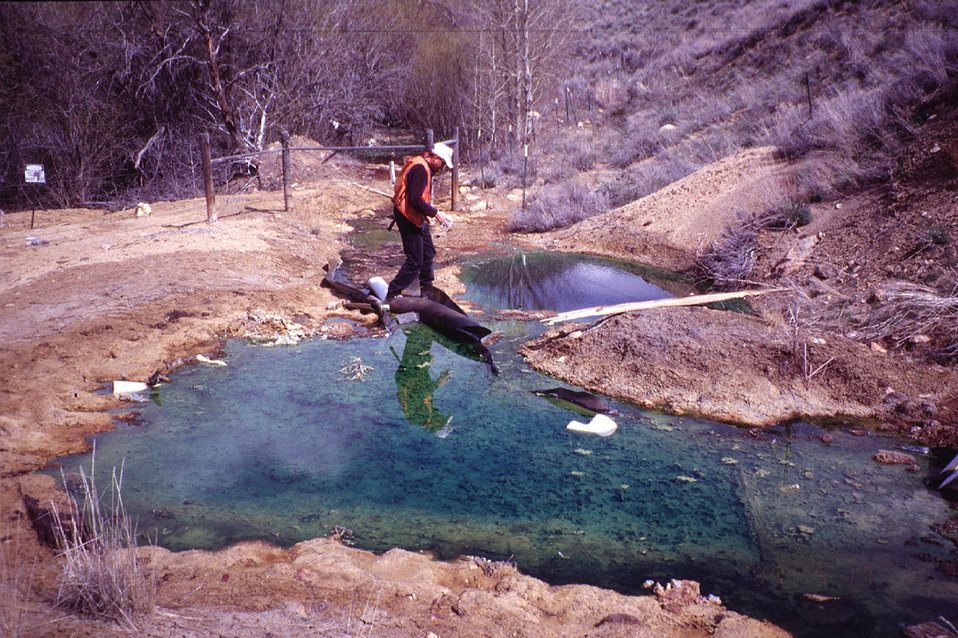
Champagne Creek Acid Mine drainage Southeastern Idaho Idaho Falls Field Office USRD